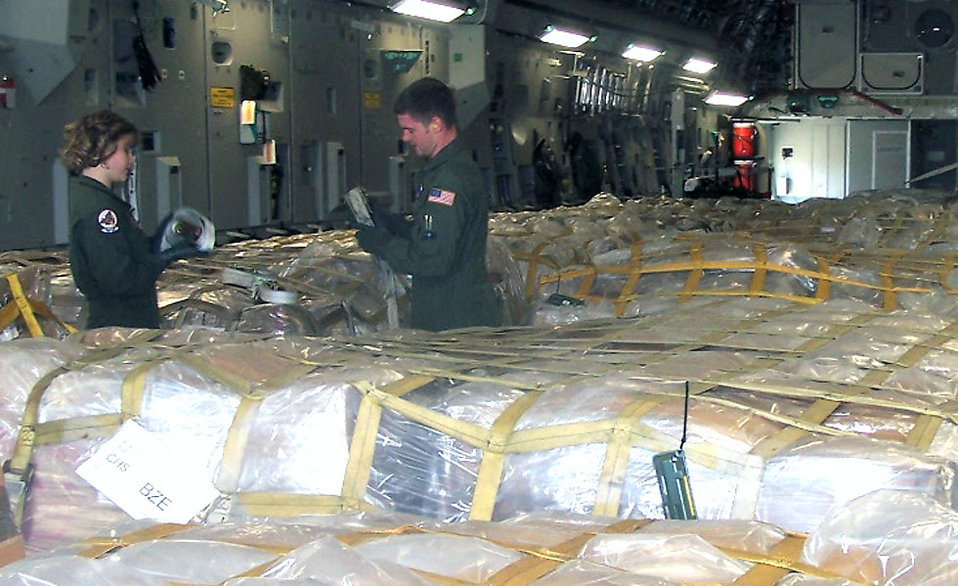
Charleston reservists fly children's shoes to Belize

Loadmasters with the Air Force Reserve Command's 701st Airlift Squadron at Charleston Air Force Base, S.C., prepare to unload humanitarian cargo destined for children in Belize. The Denton Amendment allows the U.S. military to transport, on a space-available basis, humanitarian supplies from non-governmental organizations to people around the world who are in need.